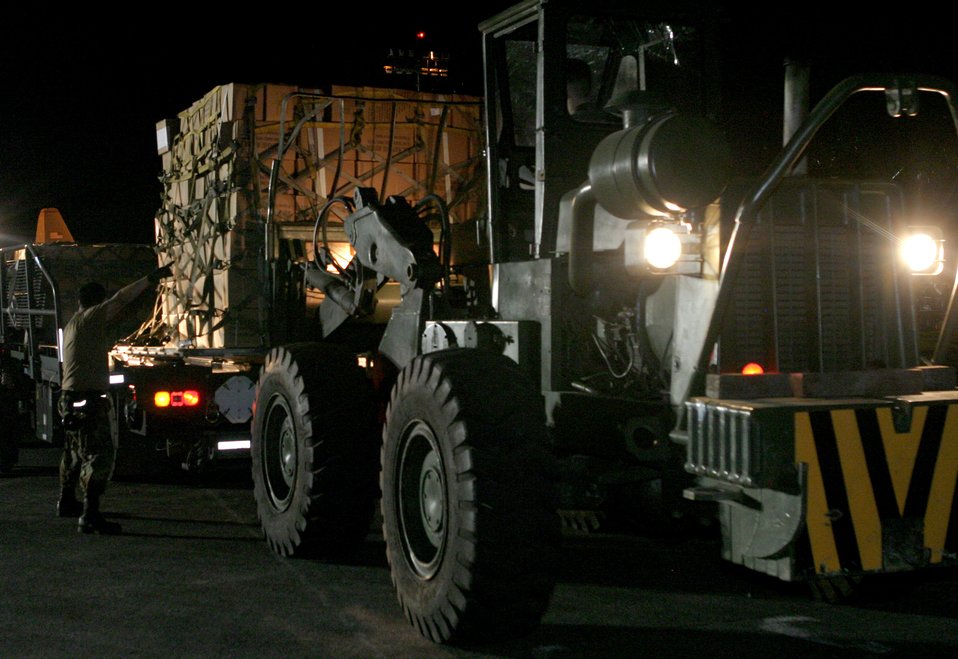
Philippine landslide relief

CLARK AIR BASE, Philippines (AFPN) -- Staff Sgt. Michael Garcia directs supplies onto a transport aircraft at Clark Air Base, Feb. 19. The supplies are part of more than 40,000 pounds of food, water and equipment being flown to Taclabon Airfield, Philippines, in support of the humanitarian relief efforts for victims of the Feb. 17 landslide in the village of Guinsaugon on the island of Leyte, Philippines.